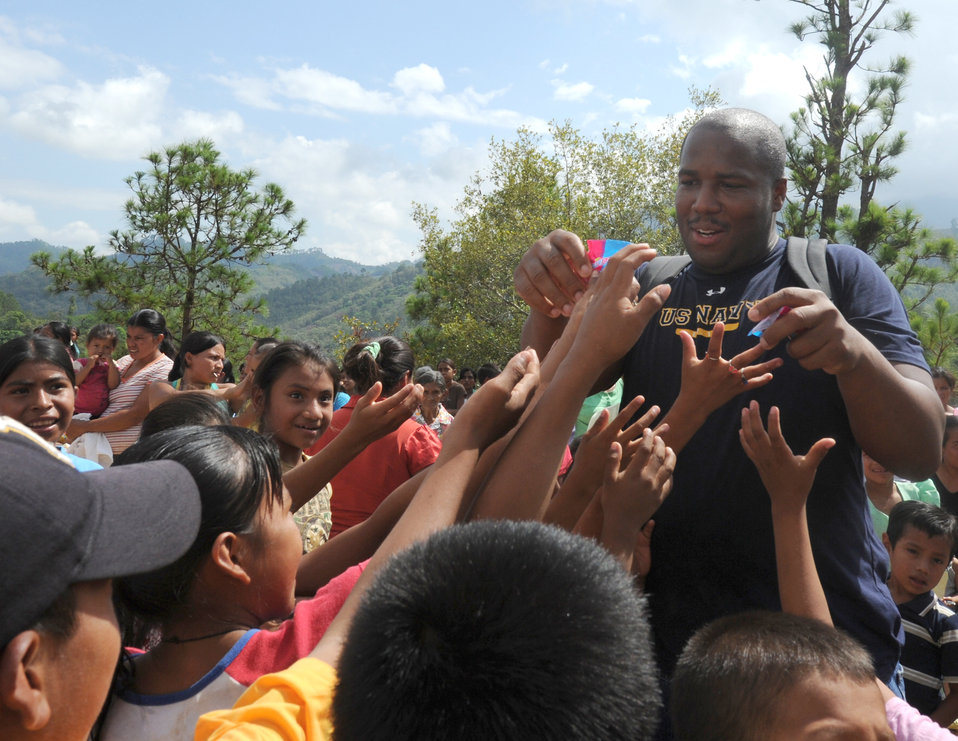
JTF-B

Petty Officer 2nd Class Corey Johnson hands out candy to children June 11, 2011, at an isolated village near Comayagua, Honduras. More than 120 Joint Task Force-Bravo members from Soto Cano Air Base, Honduras, hiked two miles up steep terrain to deliver food to people living in the town.